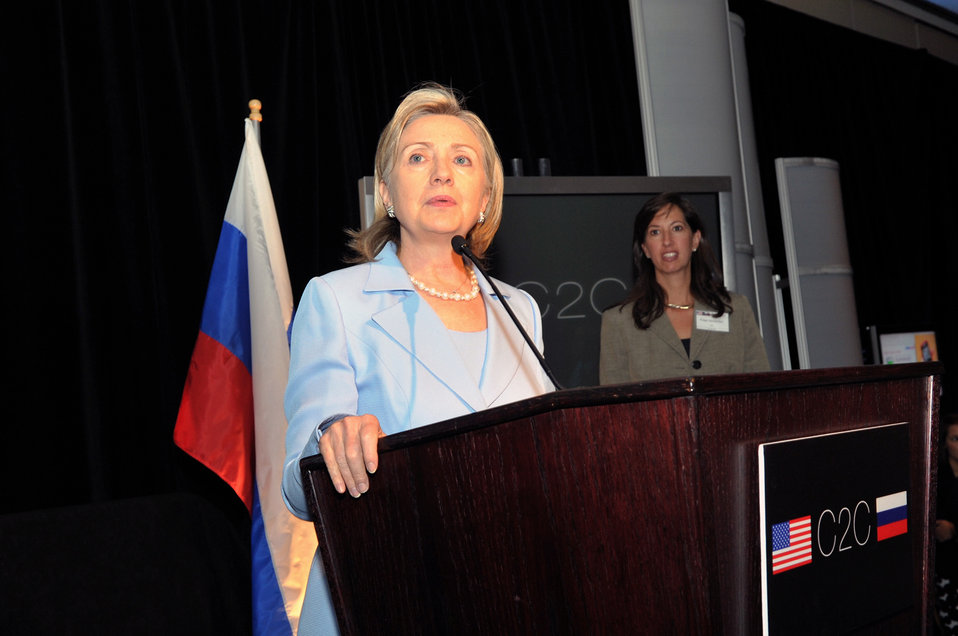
Secretary Clinton Delivers Remarks at U.S.-Russia

U.S. Secretary of State Hillary Rodham Clinton delivers remarks at the U.S.-Russia “Civil Society to Civil Society” Summit at the Renaissance Marriott Hotel in Washington, D.C., on June 24, 2010.